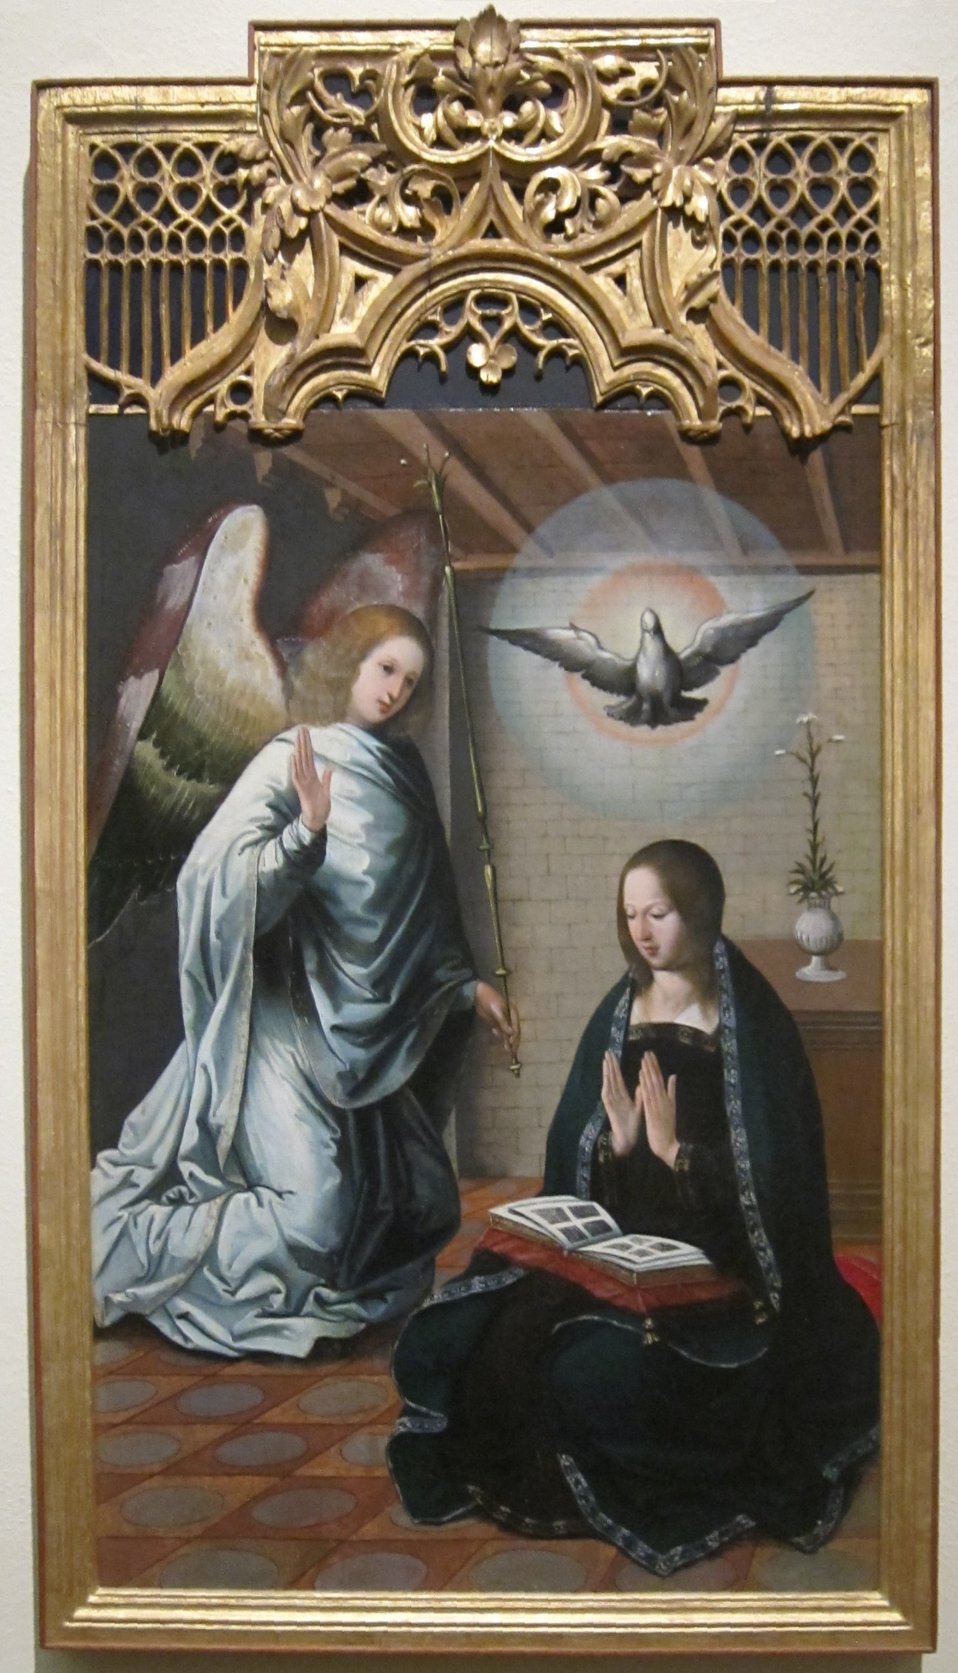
'The Annunciation' by Juan de Flandes, Cincinnati Art Museum